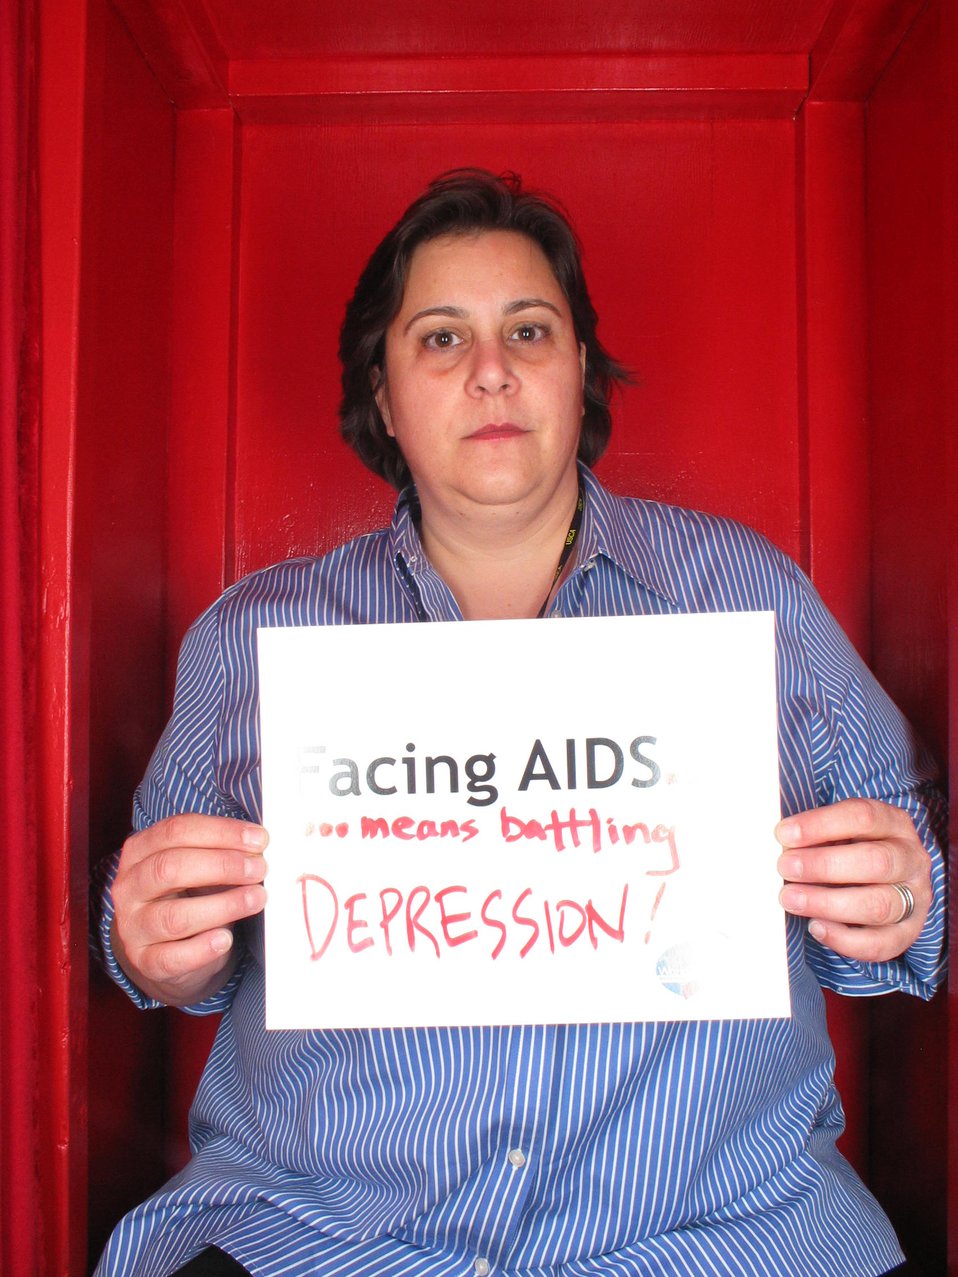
Facing AIDS means battling depression.